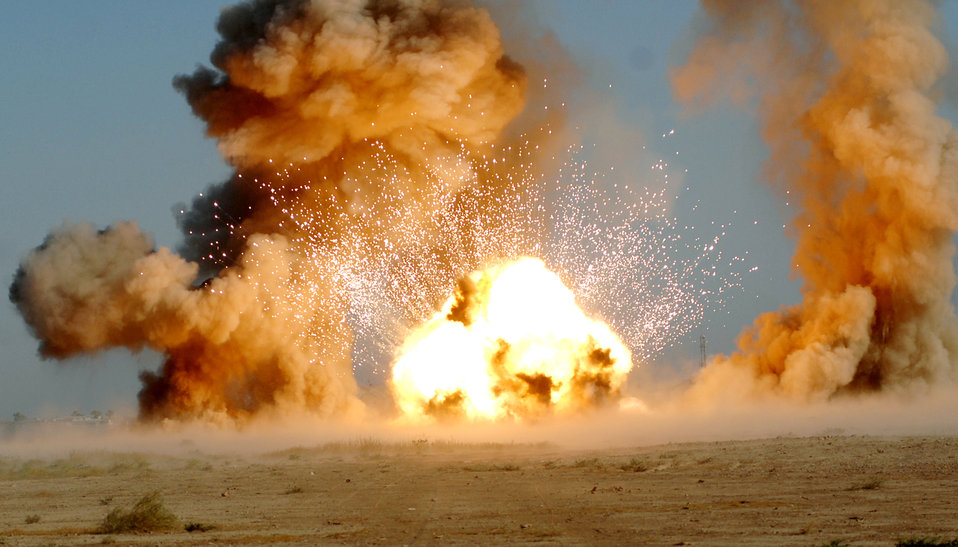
Ka-boom!

Explosive ordnance disposal technicians from the 332nd Expeditionary Civil Engineer Squadron conduct a controlled detonation Sept. 30, 2009, at Joint Base Balad, Iraq. EOD technicians are responsible for the disposal of all unexploded ordnance on the base.